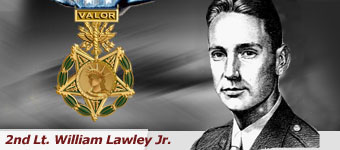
2nd Lt. William Lawley Jr.

On the first day day of